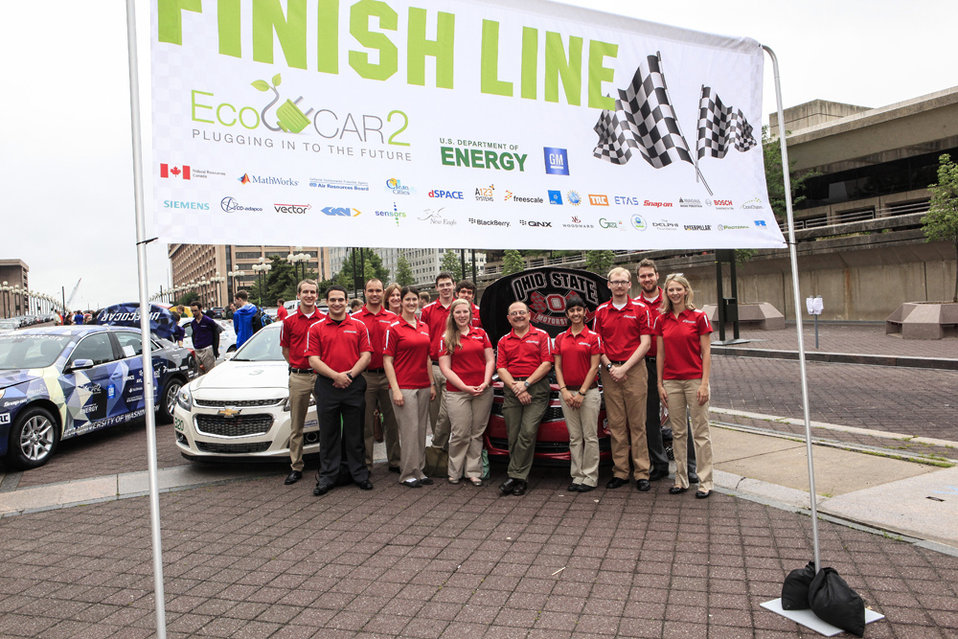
The team from the Ohio State University took home the top honors in the Energy Department's EcoCAR 2 competition for its plug-in hybrid electric vehicle that runs on electricity and E85. | Photo courtesy of EcoCAR 2.